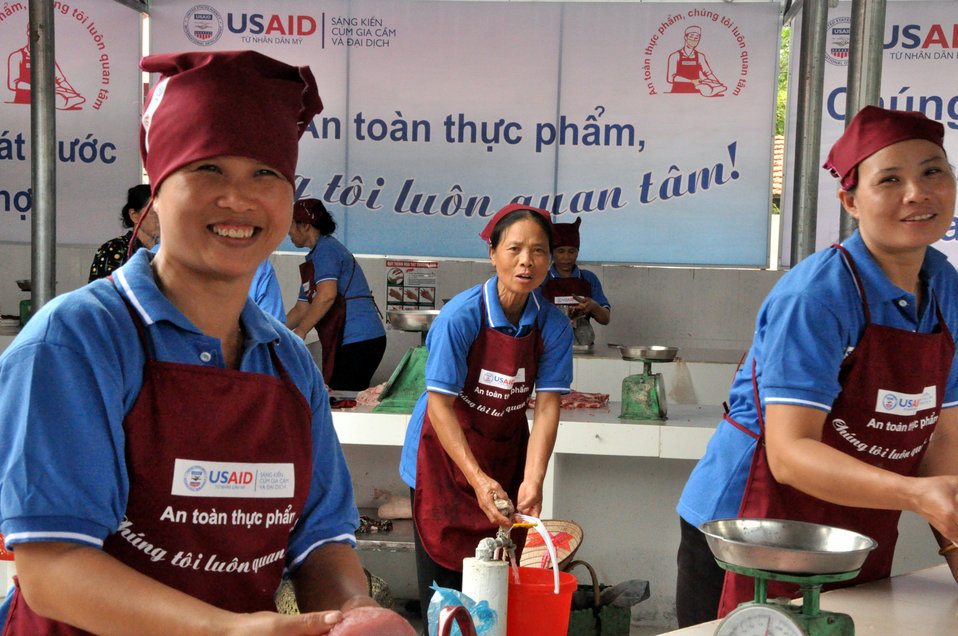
Handover Ceremony Hoa Mac Market Ha Nam

October 26, 2012